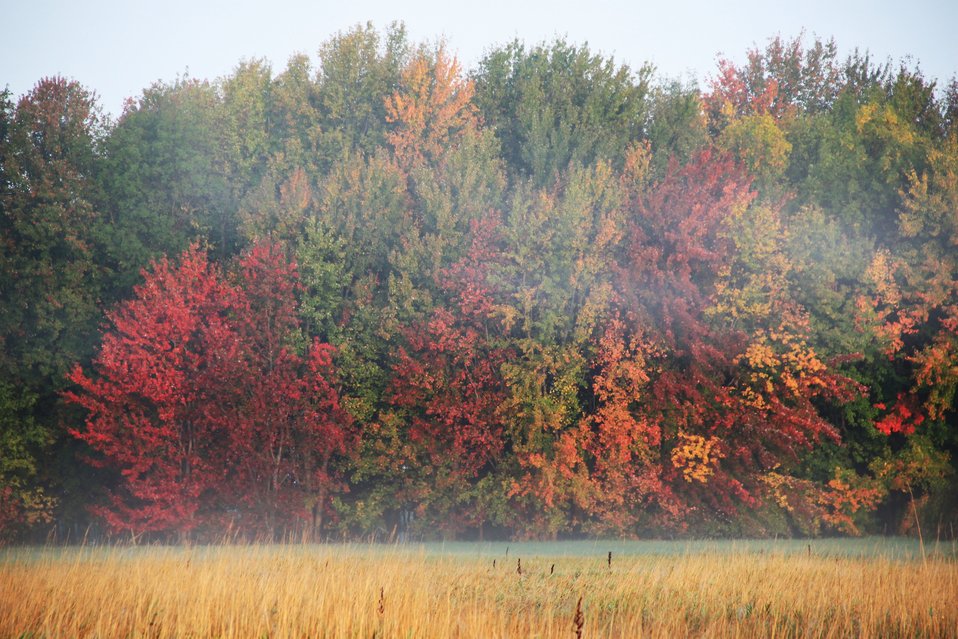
Missisquoi National Wildlife Refuge Foliage

Fall foliage near refuge office, Missisquoi National Wildlife Refuge.